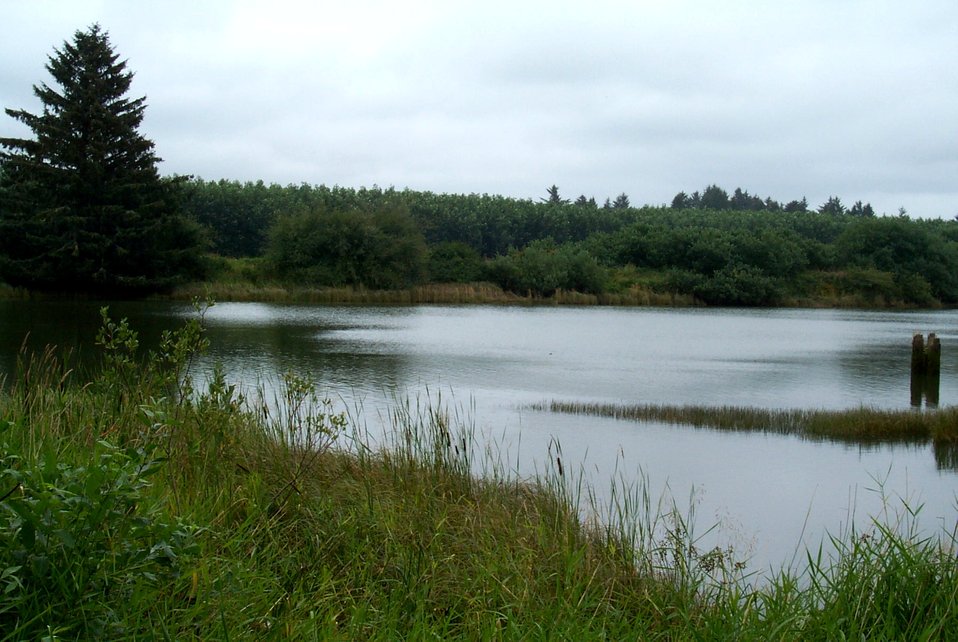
The creek where Lewis and Clark obtained their water after reaching the Pacific coast. It is believed they wintered over at this location.